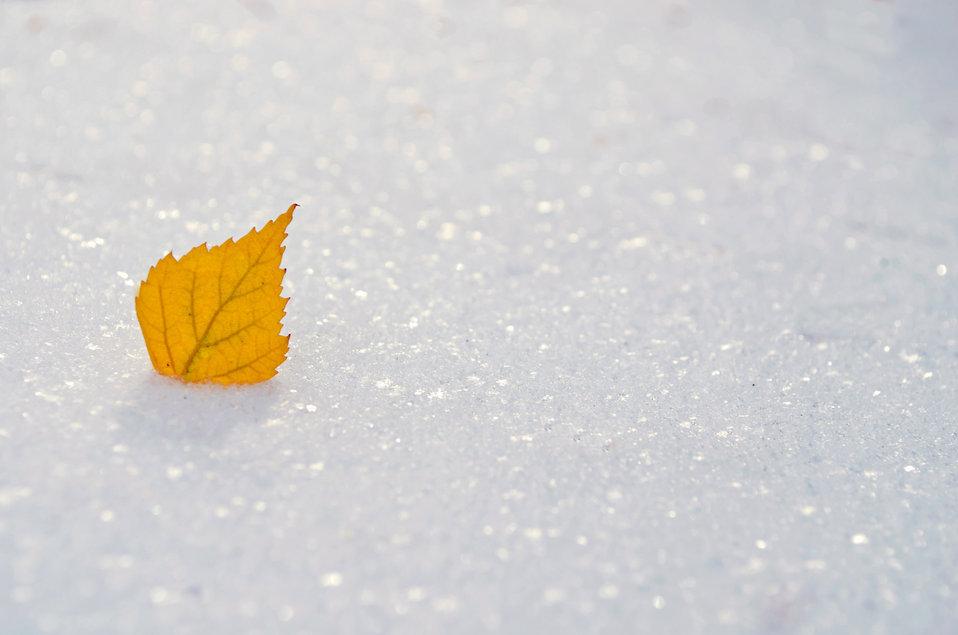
Yellow leaf on the snow.